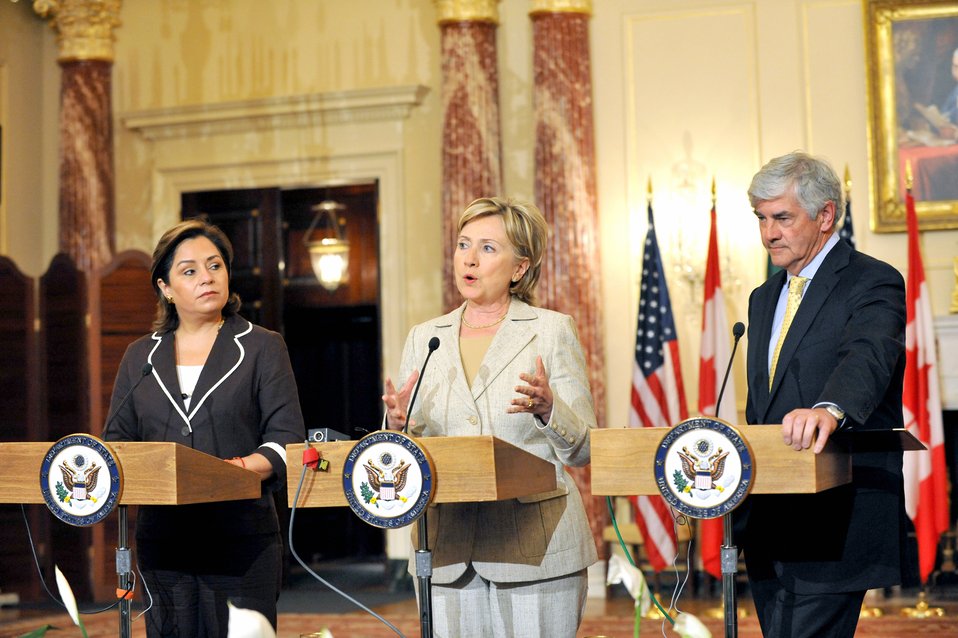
Secretary Clinton Hosts North American Trilateral Ministerial

U.S. Secretary of State Hillary Rodham Clinton hosts the North American Trilateral Ministerial with Her Excellency Dr. Patricia Espinosa Cantellano, Secretary of Foreign Relations of Mexico and The Honorable Lawrence Cannon, P.C., M.P., Minister of Foreign Affairs of Canada, in the Benjamin Franklin Room of the U.S. Department of State in Washington, DC July 16, 2009.